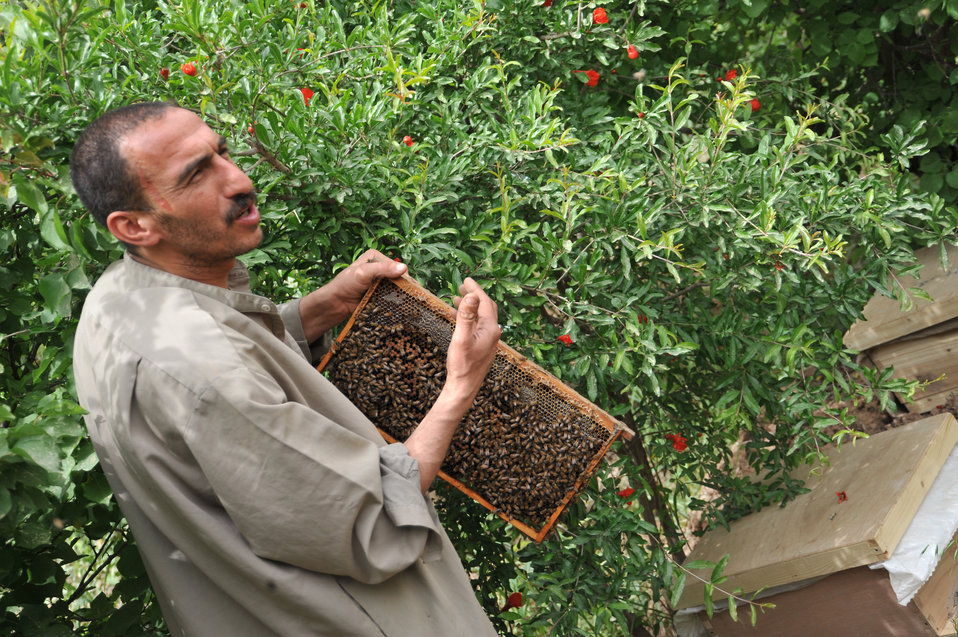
Balad team helps Iraqi women learn beekeeping trade

Alahin Aziz Saleh gives local Iraqi women a beekeeping lesson April 12, 2010, in Mazarie South, Iraq.